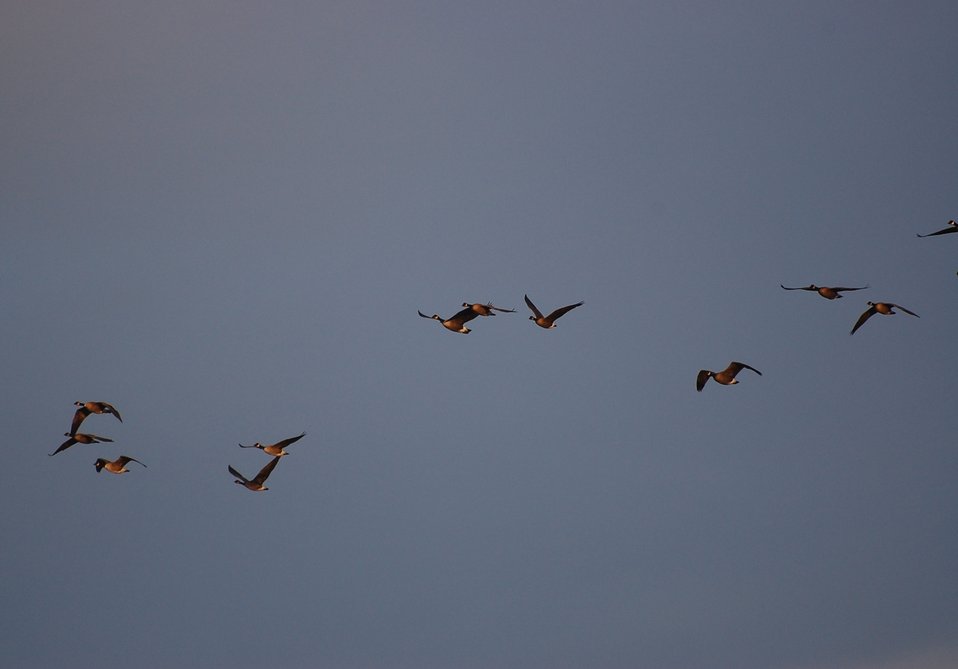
Cackling geese at Izembek Lagoon

Izembek National Wildlife Refuge